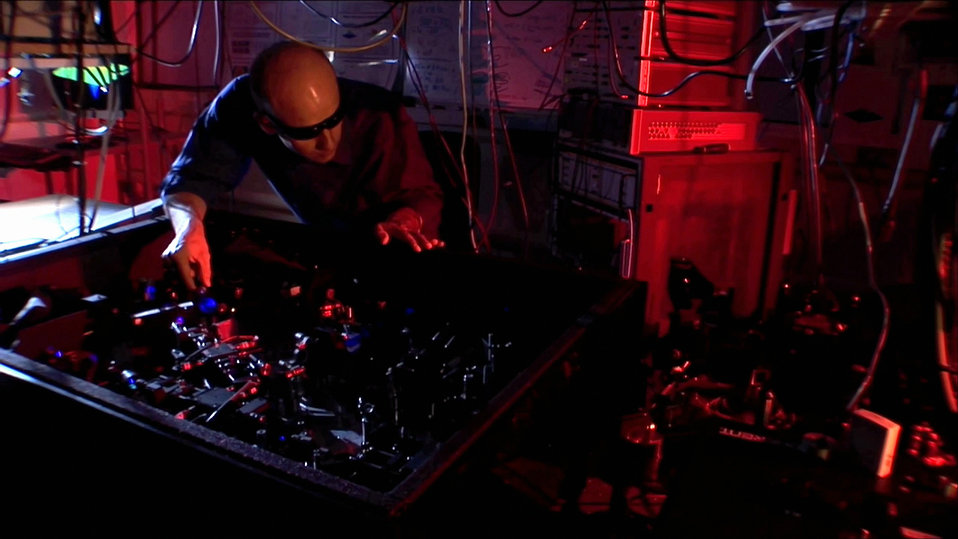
Quantum Cats

NIST research associate Thomas Gerrits at the laser table used to create 'quantum cats' made of light.